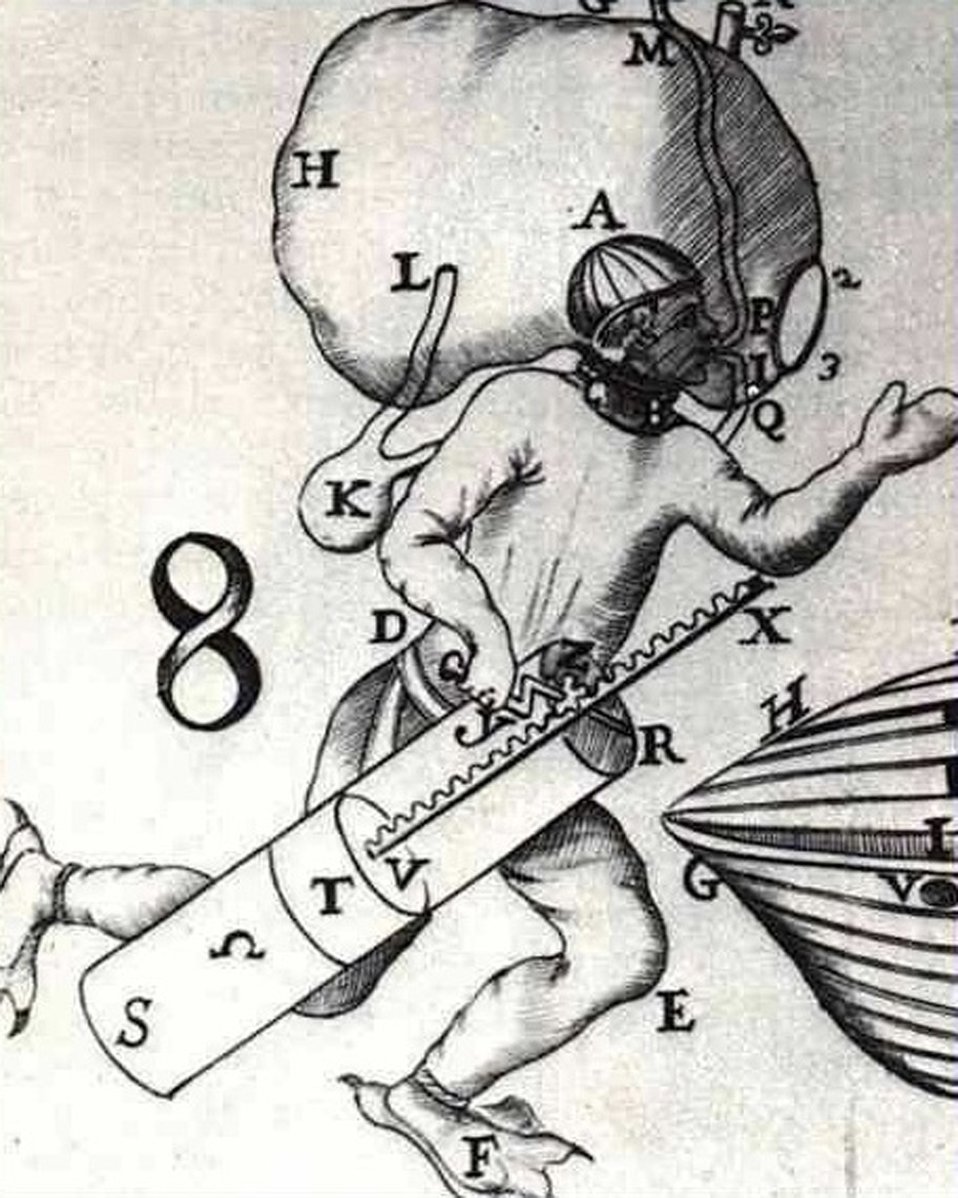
One of the earliest rebreather designs. In 1680, Giovanni Borelli envisioned a diver carrying a large bag of air from which the diver breathed as necessary.